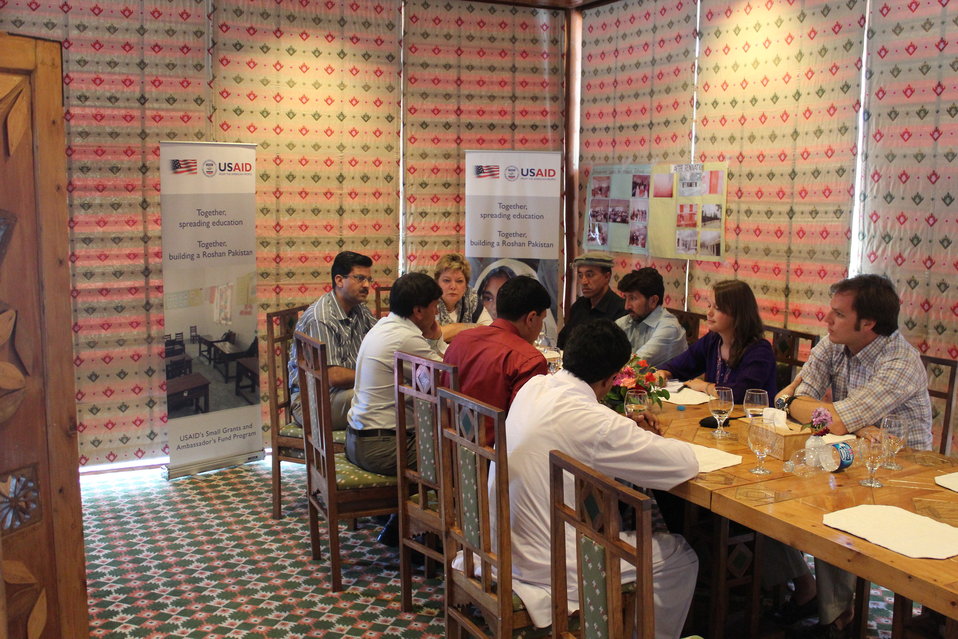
Deputy Director Karen Freeman’s visit to Gilgit Library

Karen Freeman visited the Municipal Gilgit Library on Monday, July 9. She was accompanied by other USAID staff and the staff from the Ambassador’s Fund Program. A the library, she met with Deputy Commissioner of Gilgit, Mr. Arqam and library staff, toured a photo display, and had an informal discussion with the library staff and community members about the USAID-funded project. Library staff showed the equipment funded by USAID (computers, internet, scanners, etc). The visit concluded by a Q & A session with media.